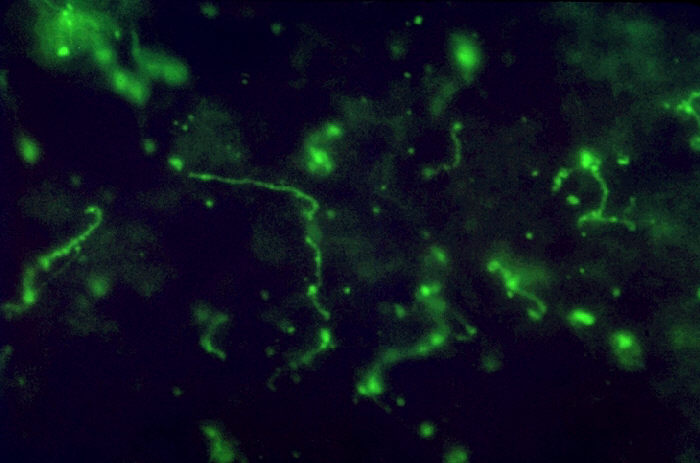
Leptospira bacteria in liver impression smear. FA stain.